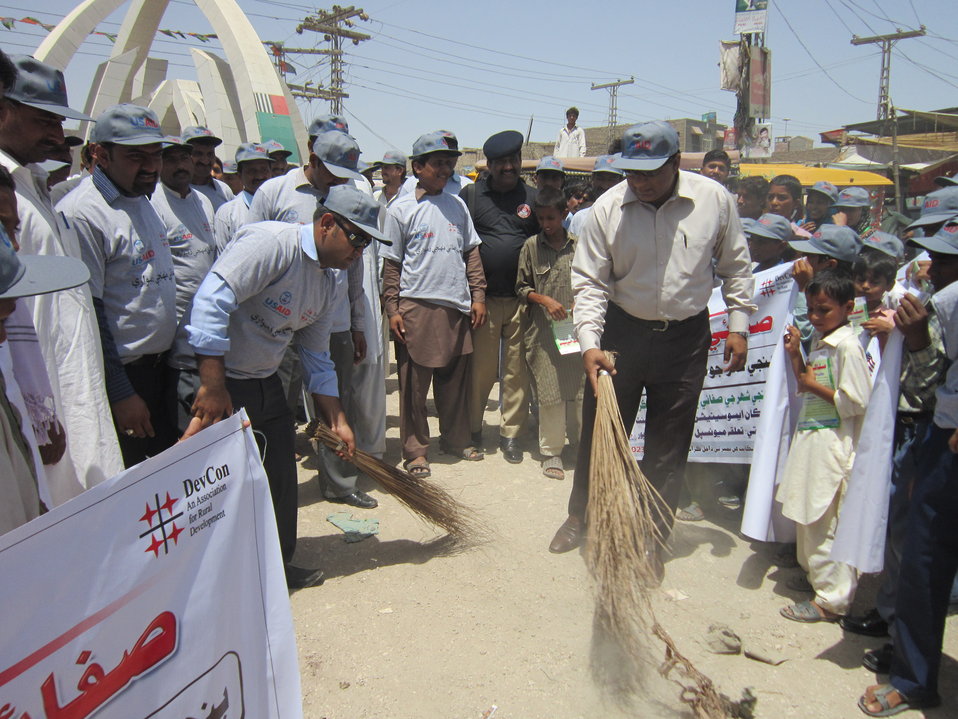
Caption 7 - DevCon - Shahdadpur - Hafta Safai 3

Assistant Commissioner of township Shahdadpur, district Sanghar, is seen participating in the week-long cleaning drive in Shahdadpur, district Sanghar, Sindh. The drive was a part of a project on municipal oversight in the said taluqa (township), being implemented by DevCon, an Association for Rural Development under USAID’s Citizens’ Voice Project.